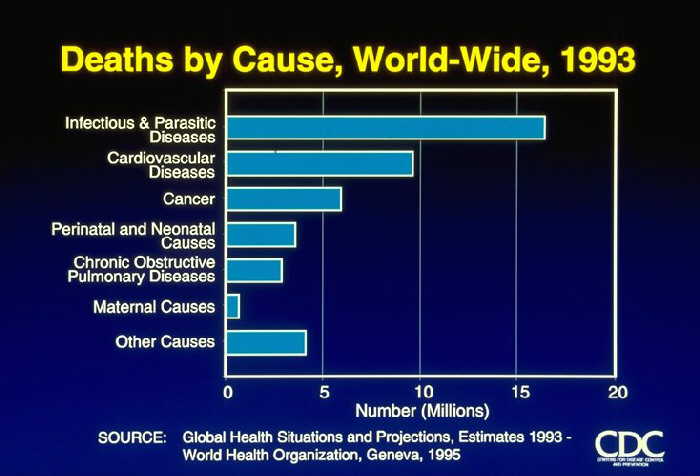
Deaths by Cause, World-Wide, 1993 (graph)